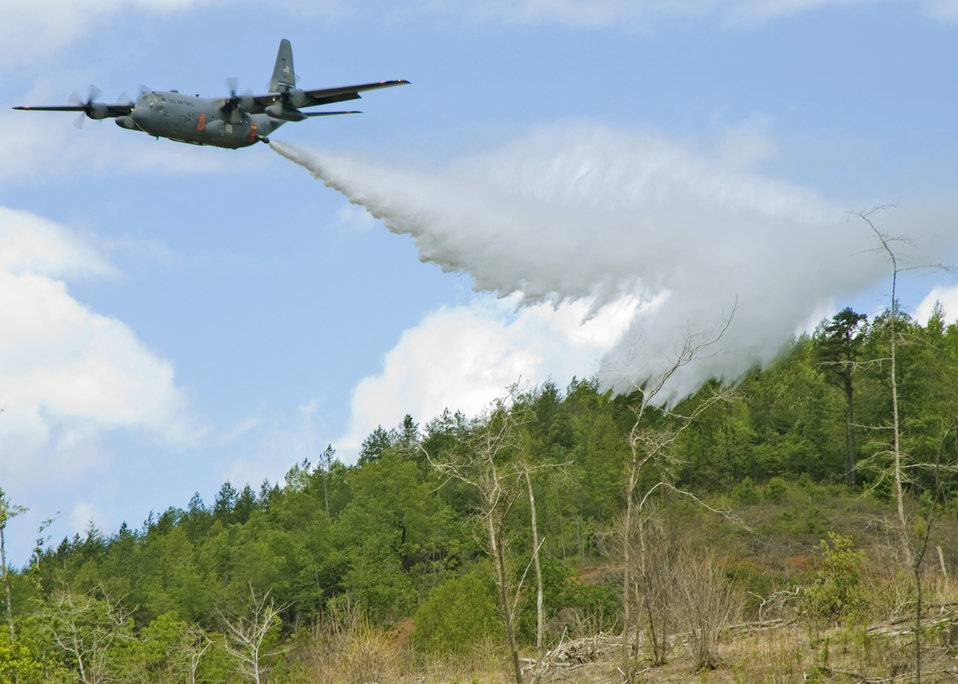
Guard members respond to fires

A C-130 Hercules from the California Air National Guard's 146th Airlift Wing at Channel Island ANG Station, Calif., drops water over the treetops during annual training in South Carolina. The unit was the first to transition to the Modular Airborne Fire Fighting Systems 2 system in 2008, and it remains the only unit flying the new system on the C-130 aircraft.